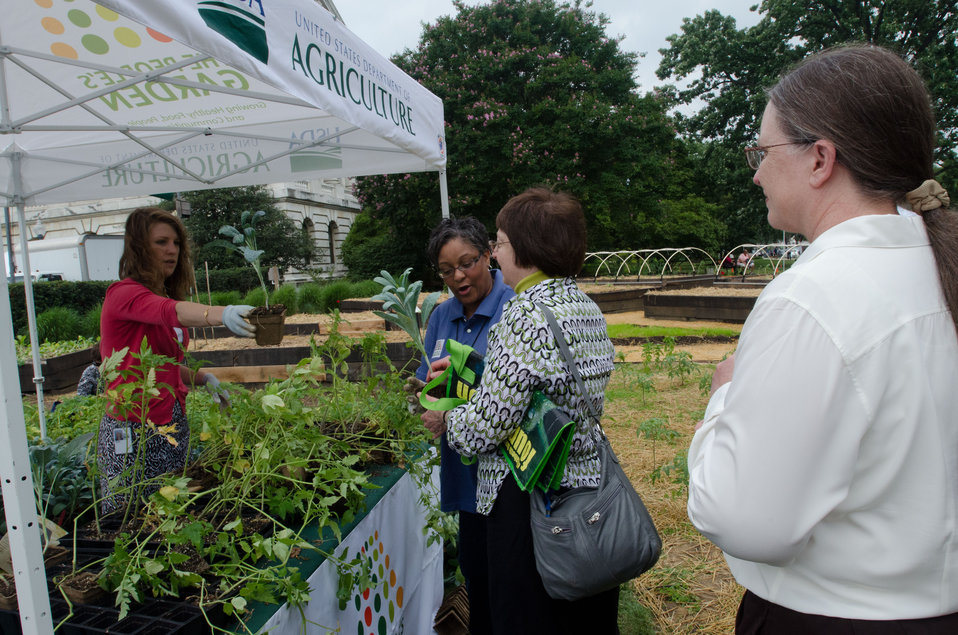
Agriculture Executive Master Gardner Laura Brown and Judy Akinola, answer cultivation questions and hand out ‘Abraham Lincoln’ Tomato plants during the giveaway of hundreds of fruit and vegetable seedlings to encourage people to get involved in community gardening and sharing their harvest with those in need, during the U.S. Department of Agriculture (USDA) summer farmers market opening of its 17th season at the USDA Whitten Building east parking lot in Washington, D.C. on Friday, May 31, 2012. USDA volunteers cultivated the seedlings. This year's theme is Grow, Healthy, Eat Healthy and Be Healthy. USDA and Fuel Up to Play 60, in partnership with the National Dairy Council and the National Football League, invited residence, visitors and local school children to participate in opening day activities. Hip Hop Public Health featuring Easy A.D. from Cold Crush Brothers and disk jockey Artie Green play music and invite people to get up on stage to dance or hula hoop to get active. D.C. Truck Farm helps people know from what plants, herbs, fruit and produce come from by giving tail-gate tours of the garden growing in the bed of their pickup truck. The Peoples Garden Initiative and USDA Executive Master Gardeners gave away a variety of fruit and produce seedlings to include the ‘Abraham Lincoln’ Tomato in celebration of the USDA 150th Anniversary and to share their harvest. New features for 2012 include an on-site sign language interpreter, a hand washing station, and a USDA-certified organic vendor. Other products selling today are fresh fruits, vegetables, herbs, baked goods, meats, kettle popcorn, local honey, hand-made soap and more.